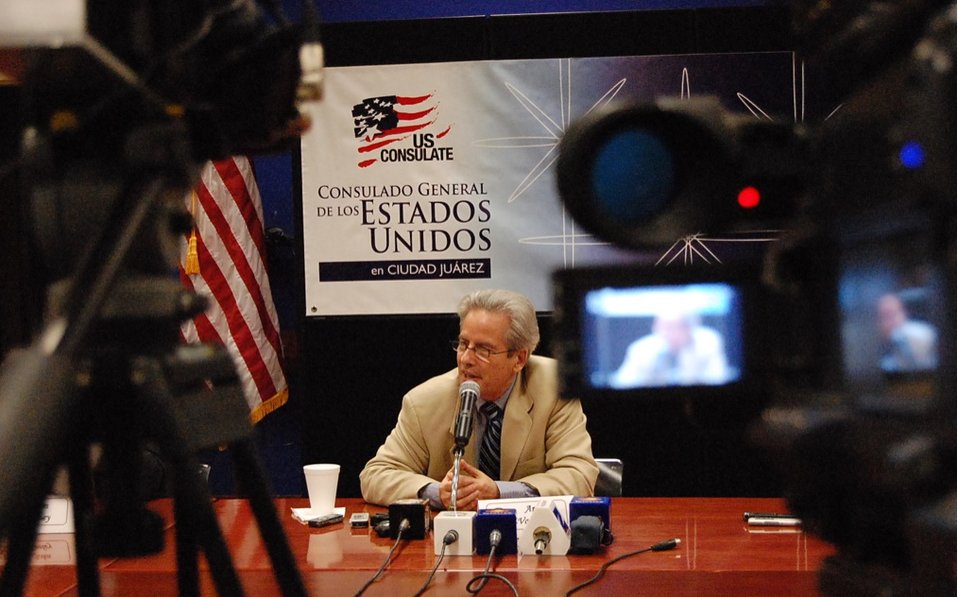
Assistant Secretary Valenzuela Responds to Questions

U.S. Assistant Secretary for Western Hemisphere Affairs Arturo Valenzuela responds to questions during a press briefing in Juarez, Mexico, on June 16, 2010.